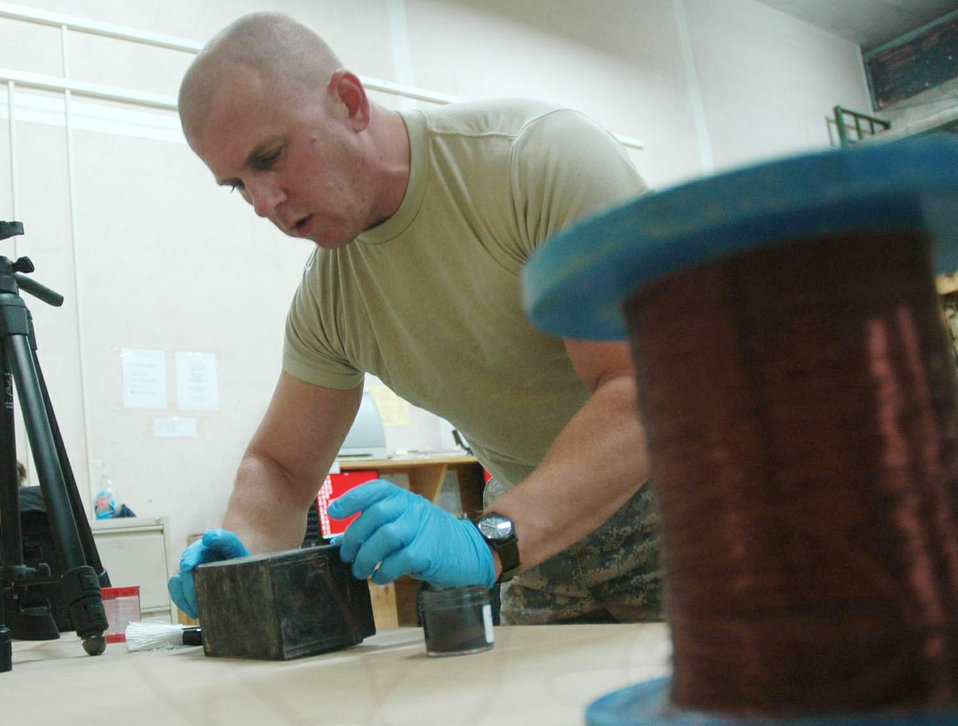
Battlefield detectives fight with fingerprints

Navy Petty Officer 2nd Class James Hammond exploits a piece of evidence recovered from an improvised explosive device incident June 16 at Al Asad Air Base, Iraq. Weapons Intelligence Team members are skilled in IED construction, fingerprinting, biometrics, foreign weapons, media exploitation and sensitive sight exploitation. Petty Officer Hammond is a member of Weapons Intelligence Team 7.